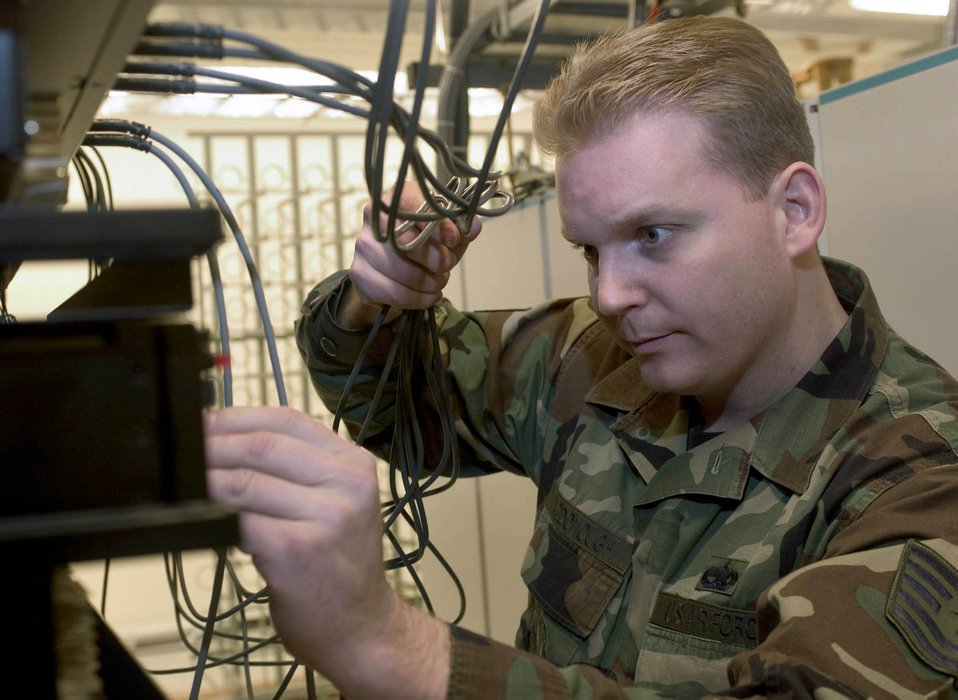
All wired up

AVIANO AIR BASE, Italy -- Tech. Sgt. Mark MacDonough tests new hardware being installed here. He is a satellite wideband and telemetry maintainer assigned to the 1st Communications Maintenace Squadron at Kapaun Air Station, Germany. Sergeant MacDonough is on temporary duty here to upgrade the optical network system.